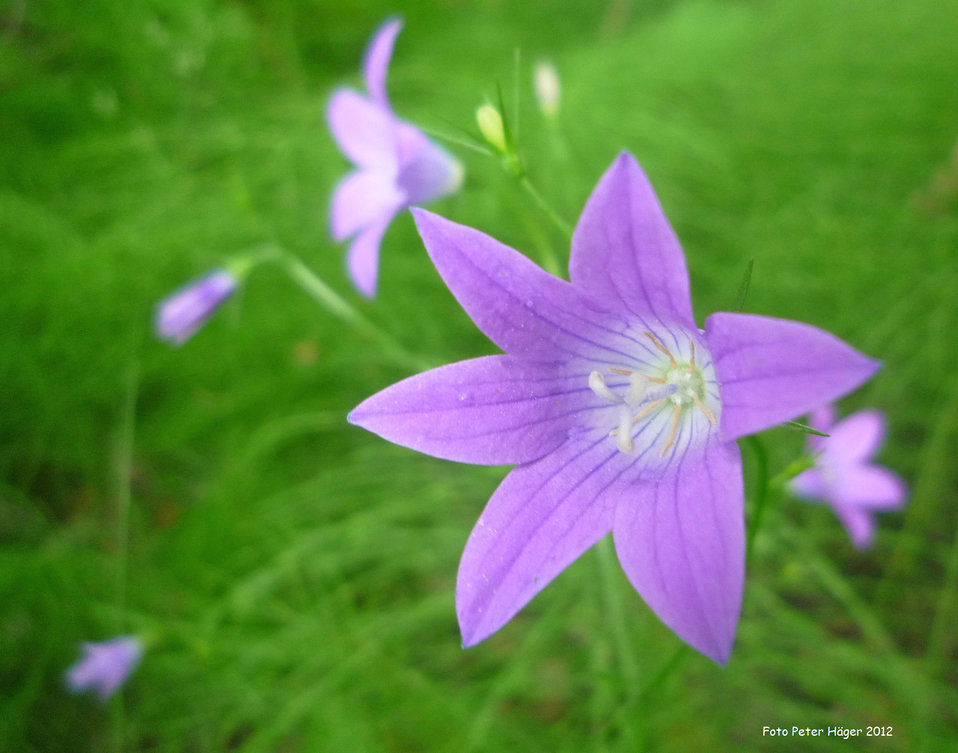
Meadow clock

Campanula patula.